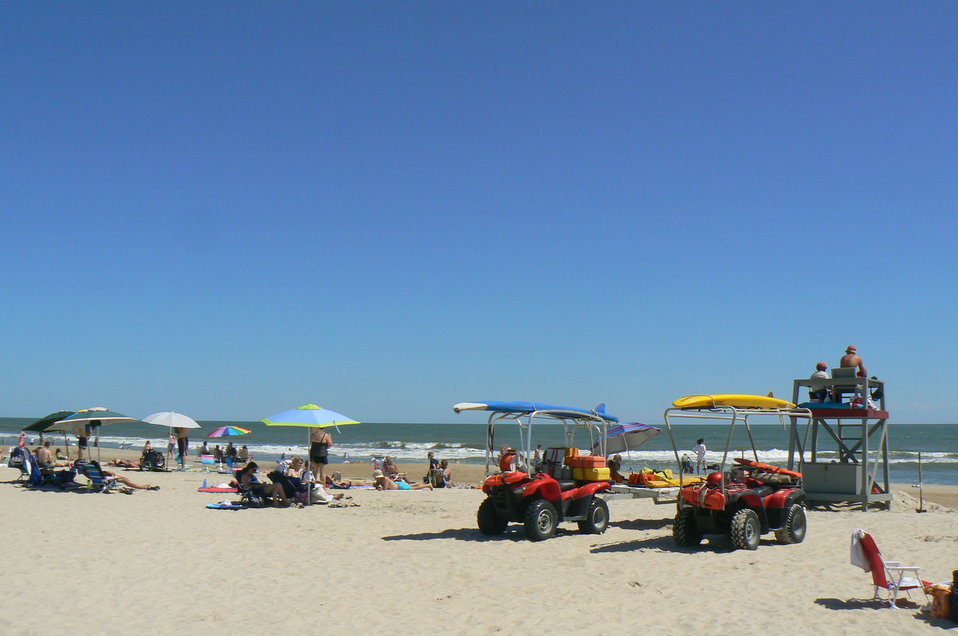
Chincoteague Beach, post Irene.

Michael Dixon/USFWS